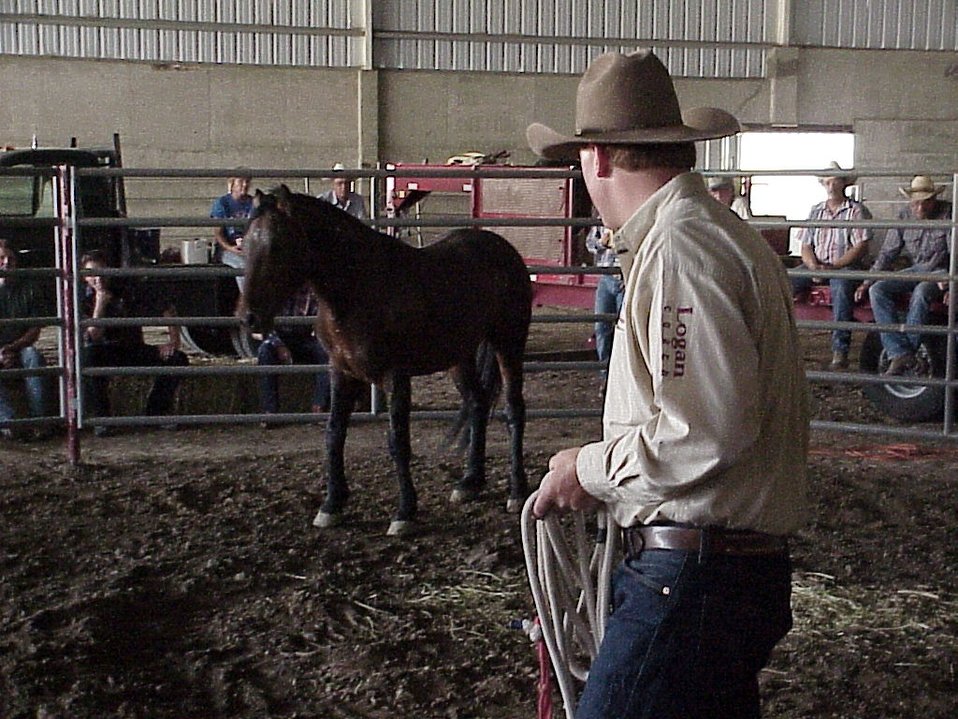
Horse Gentler Mario Johnson Lewiston Wild Horse and Burro Adoption Program Auction WHB indoor auction Cottonwood Field Office UCSC Upper Columbia Salmon Clearwater District